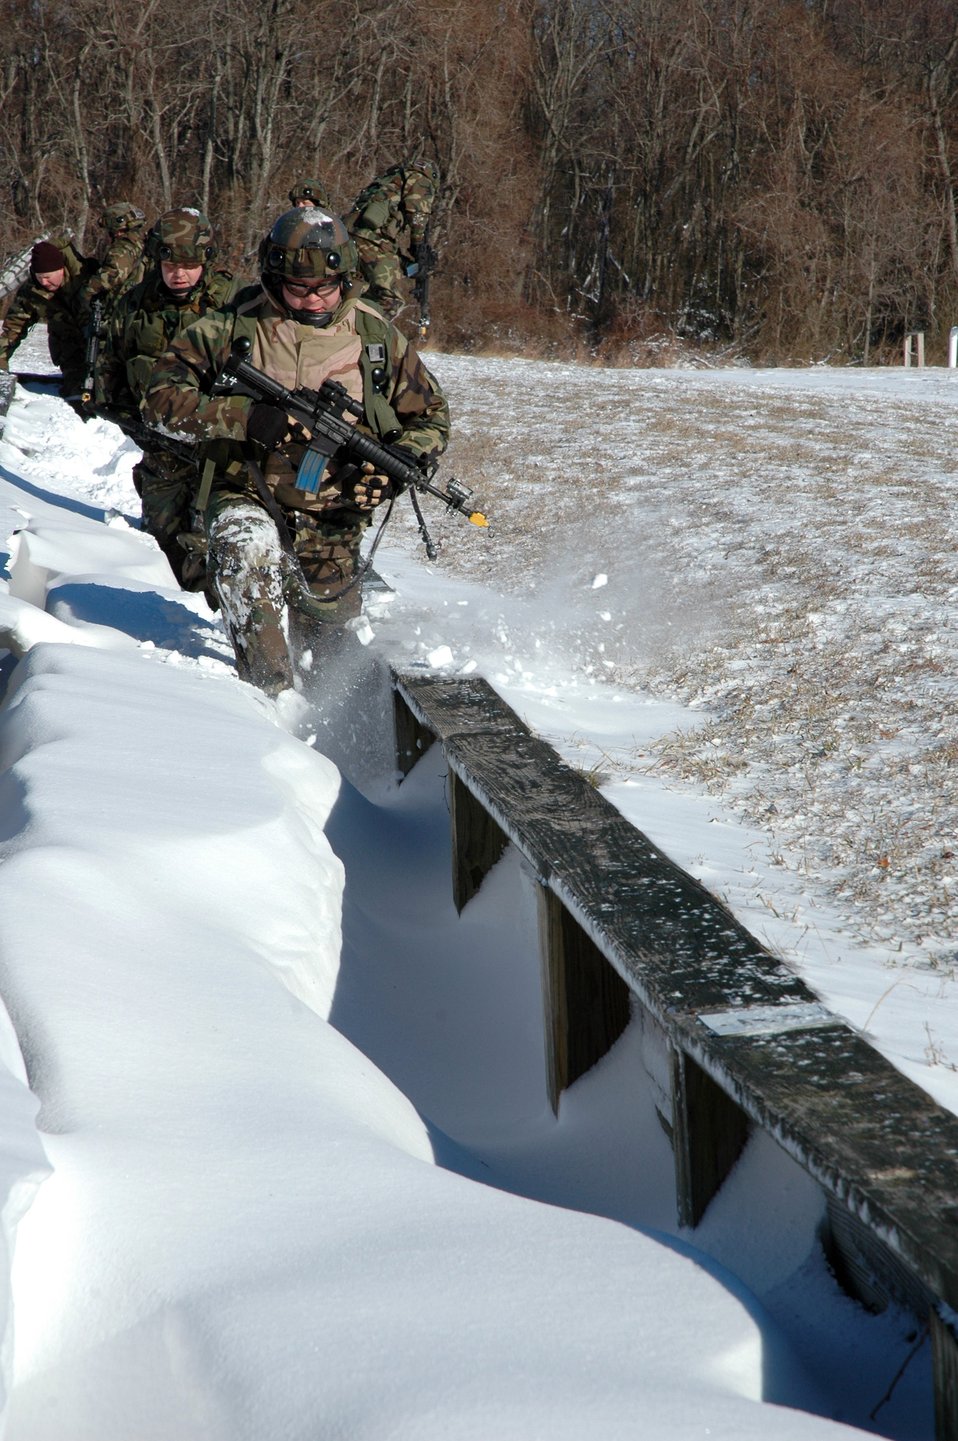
Winter training

FORT DIX, N.J. (AFPN) -- First Lt. Brooks Roland leads the charge through a snowdrift inside a trench here Jan. 15. The course was part of the Air Mobility Warfare Center's Air Force Integrated Contingency Skills Training Course 06-1. More than 100 Airmen from Air Mobility Command are participating in this program, which compliments wing-level training programs around the command. Lieutenant Roland is a security forces officer with the 621st Contingency Response Wing at McGuire Air Force Base, N.J.